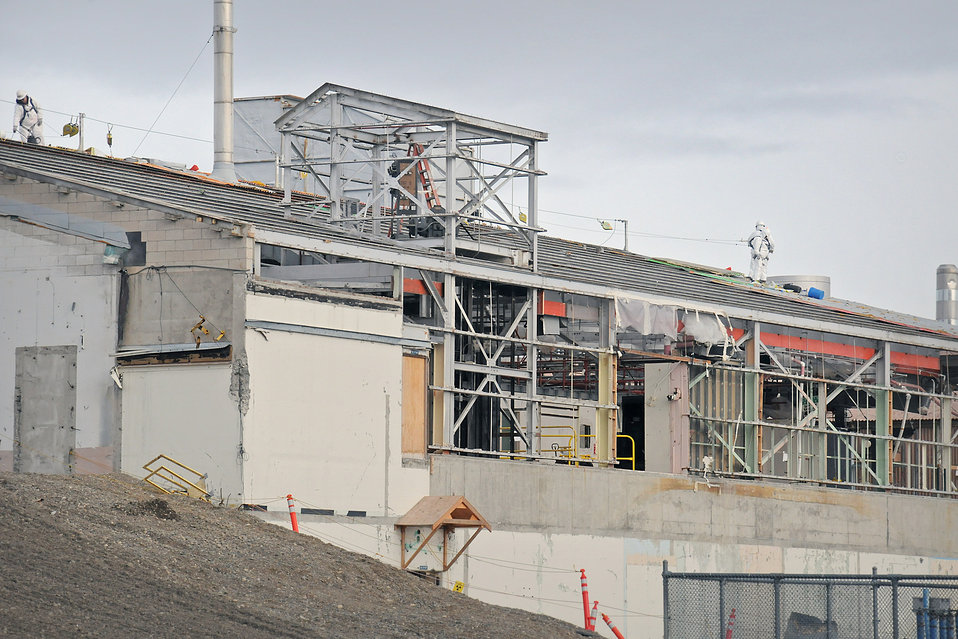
Idaho CPP-602 Recovery Act Work

Recovery Act workers remove transite (an asbestos-cement product) panels from the roof of CPP-602, a facility once part of the fuel reprocessing complex at the Idaho Site.